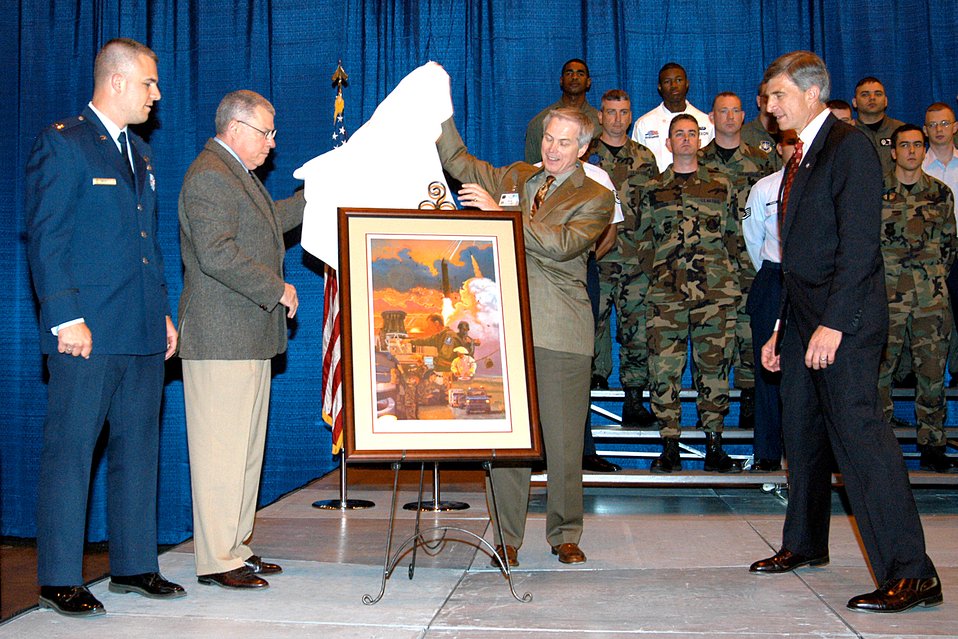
Peacekeeper missile deactivation

F.E. WARREN AIR FORCE BASE, Wyo. -- (From left) Capt. Warren Neary, retired Col. Roscoe Moulthrop and retired Maj. Gen. Jerry Perryman present a painting to Dr. Ronald Sega during the Peacekeeper missile deactivation ceremony Sept. 19. The painting is a montage of the people who carried out the Peacekeeper mission throughout its 19-year history. Dr. Sega is the undersecretary of the Air Force.